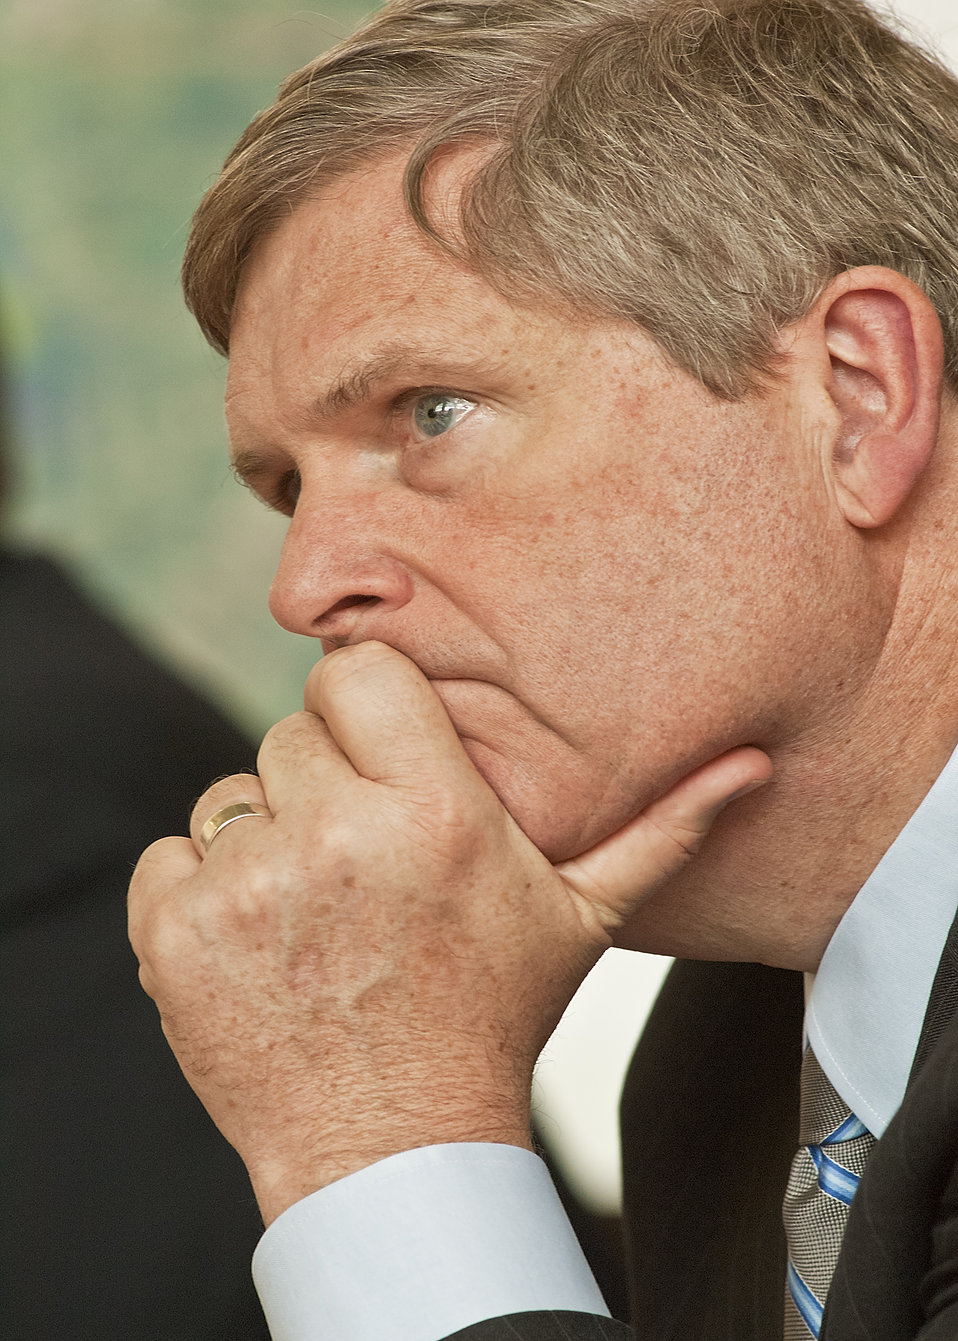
Agriculture Secretary Tom Vilsack listens to questions posed by farmers during a town hall meeting at the Glenwood Community High School in Glenwood, Iowa on Thursday, June 16, 2011. Farmers, local and regional media listened and questioned Secretary Vilsack on the cause of the floodwaters along the Missouri River affecting Iowa and Nebraska. Secretary Vilsack offered advice and assistance available through the United States Department of Agriculture and other federal agencies.